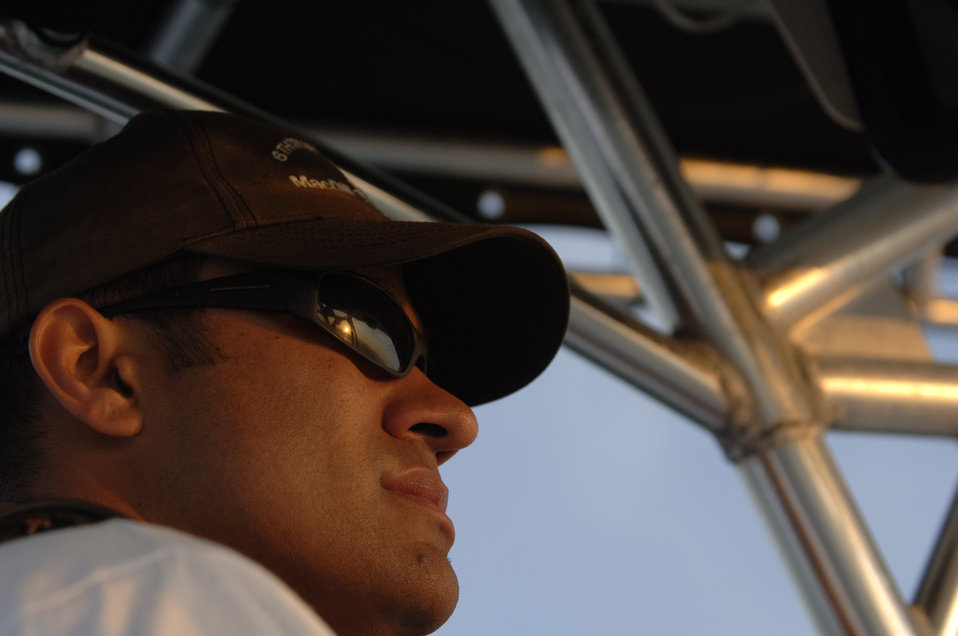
Bay watch

Staff Sgt. Randall Resto polices Tampa Bay Nov. 27 near MacDill Air Force Base, Fla. Sergeant Resto is a member of the 6th Security Forces Squadron boat patrol, one of the units in the Air Force to have a boat patrol and the only one to conduct patrols overnight.